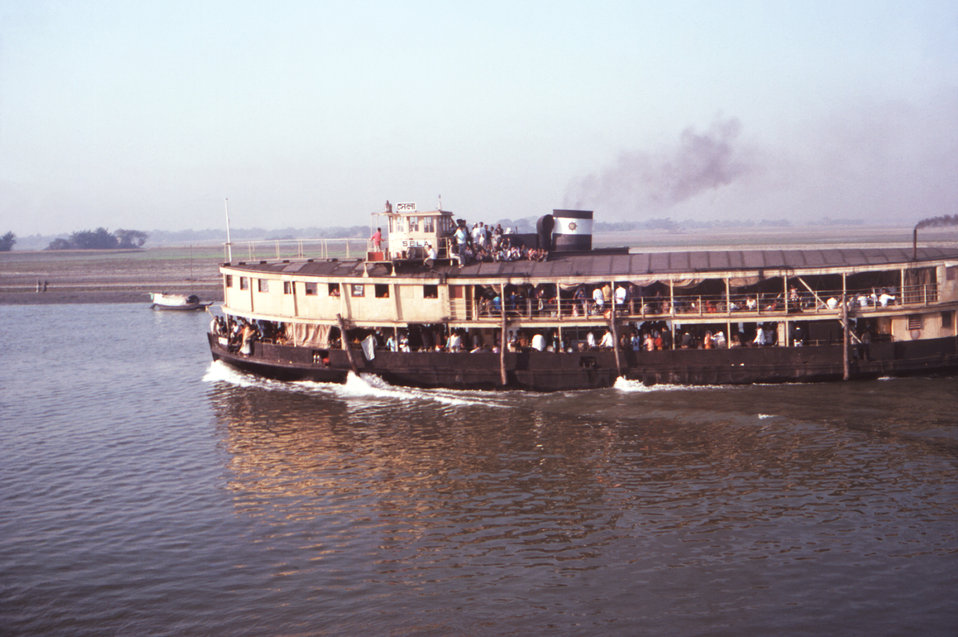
Pictured here, in this December, 1975 image, was the paddlewheel steamer nicknamed 'The Rocket', as it traveled along Bangladesh's Meghna River, at a point where the river meets the Ganges Delta, and flows into the Bay of Bengal. Travel by boat was the major means of transport throughout the southern region of Bangladesh.